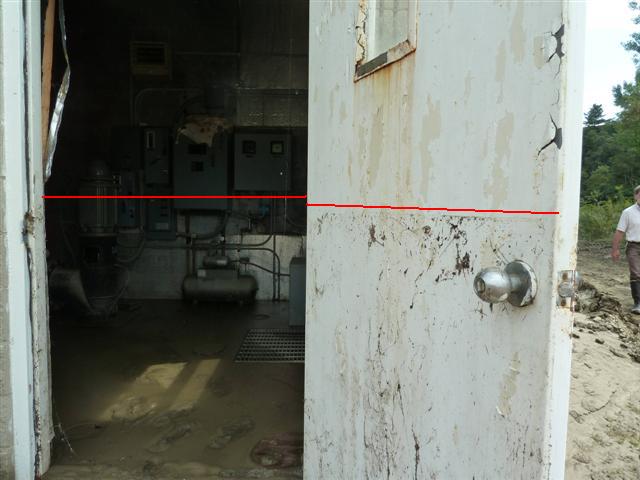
Damage at White River NFH - Bethel, VT

Damage to the interior pump station at White River NFH